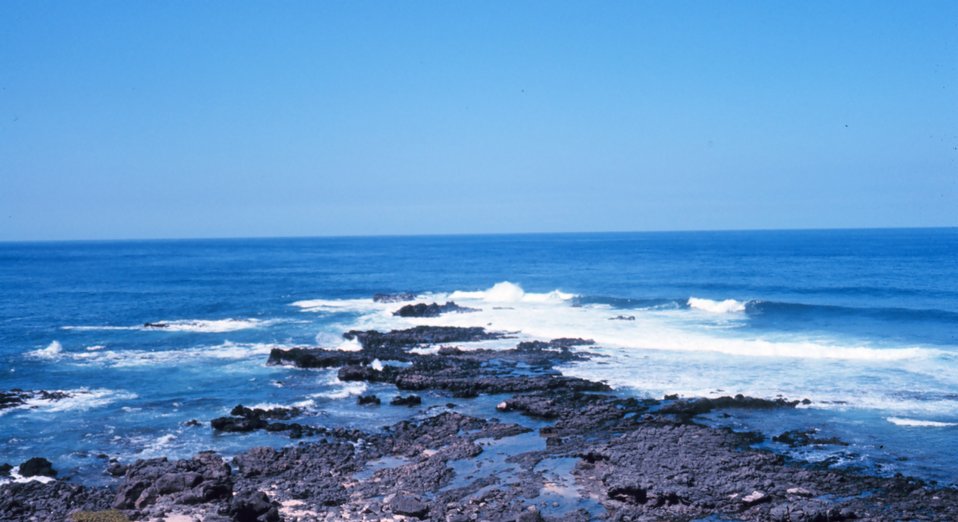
Waianae coast -southwest Oahu